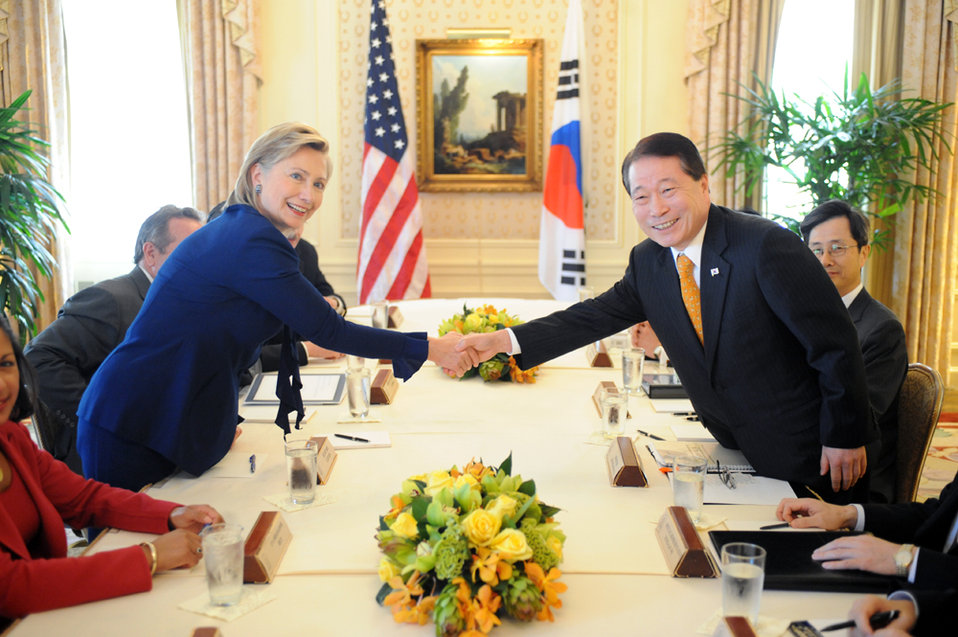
UNGA 2009: Secretary Clinton Meets With South Korean Foreign Minister

U.S. Secretary of State Hillary Rodham Clinton meets with South Korean Minister of Foreign Affairs and Trade Yu Myung-hwan at the Waldorf Astoria hotel during the 64th Session of the UN General Assembly in New York City, New York September 21, 2009.